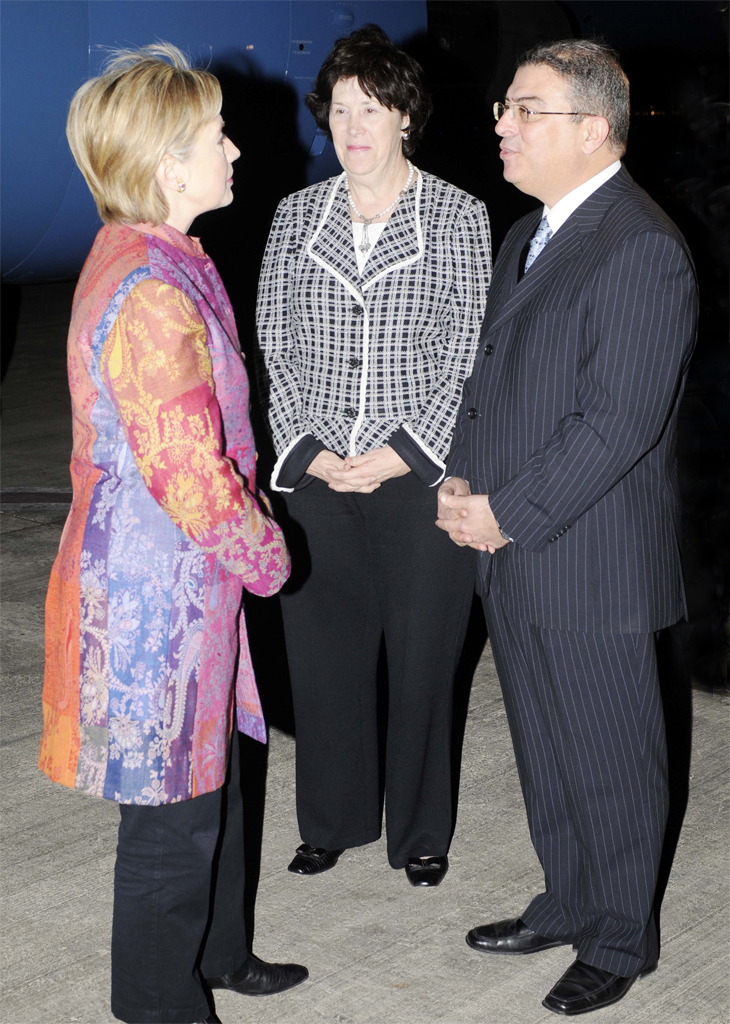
Secretary Clinton Arrives in Egypt

Secretary Clinton, U.S. Ambassador to Egypt Margaret Scobey and Ambassador Ibrahim Hairat, Assistant Minister of Foreign Affairs and Chief of Protocol, Arab Republic of Egypt in Sharm el-Sheikh, Egypt March 1, 2009.